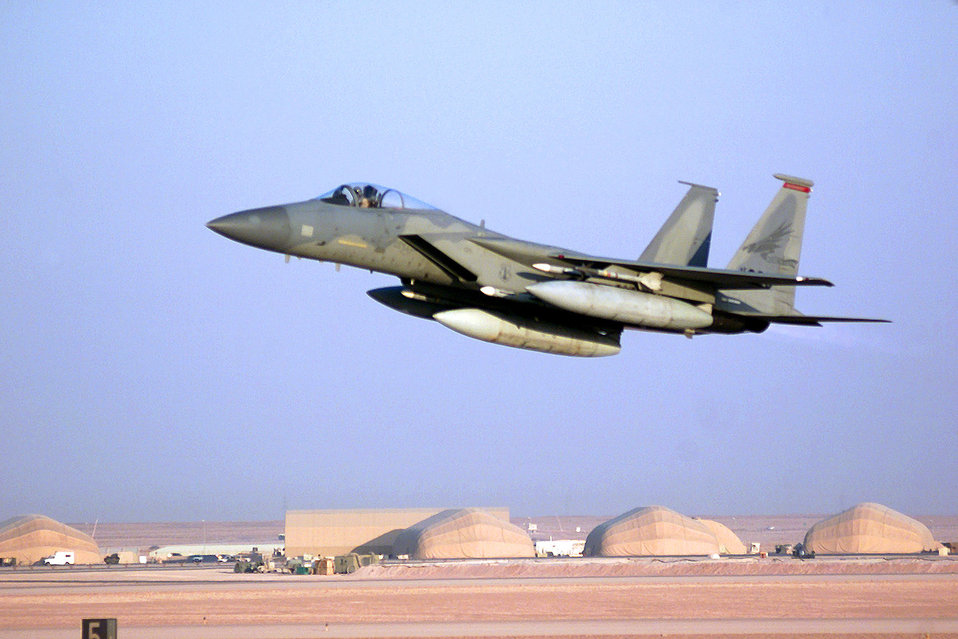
End of the watch

PRINCE SULTAN AIR BASE, Saudi Arabia -- An F-15 Eagle takes off during Operation Southern Watch, which was a major operation here for the past seven years. U.S. officials ended an era with the inactivation of the 363rd Air Expeditionary Wing at a ceremony Aug. 26. At the height of Operation Iraqi Freedom, the base was home to more than 5,000 troops and about 200 coalition aircraft.